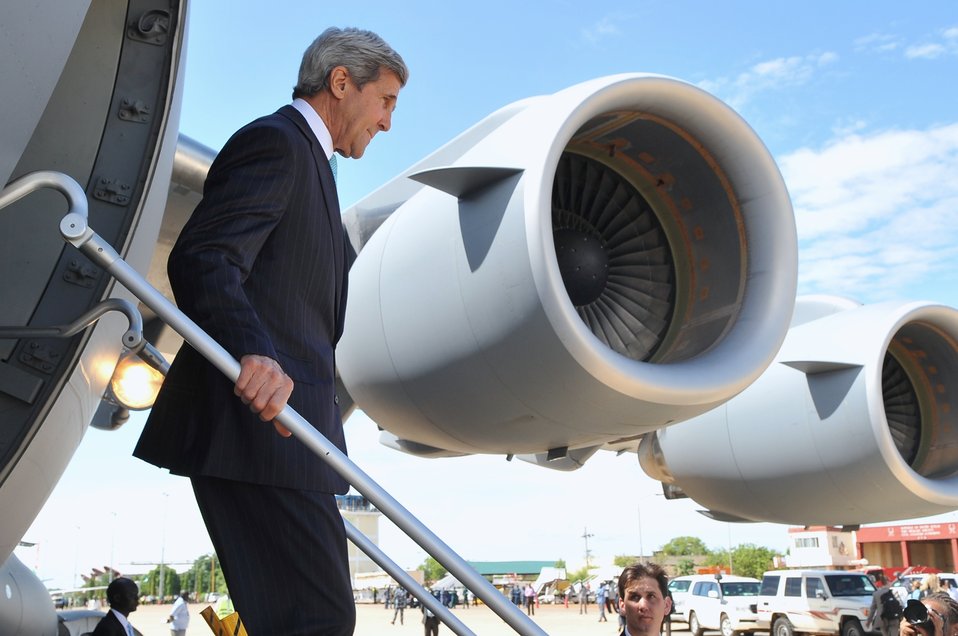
Secretary Kerry Disembarks After Arriving in Juba for Meeting With South Sudanese President Kiir

U.S. Secretary of State John Kerry steps off an Air Force C-17 plane that flew him from Addis Ababa, Ethiopia, to Juba, South Sudan, on May 2, 2014.